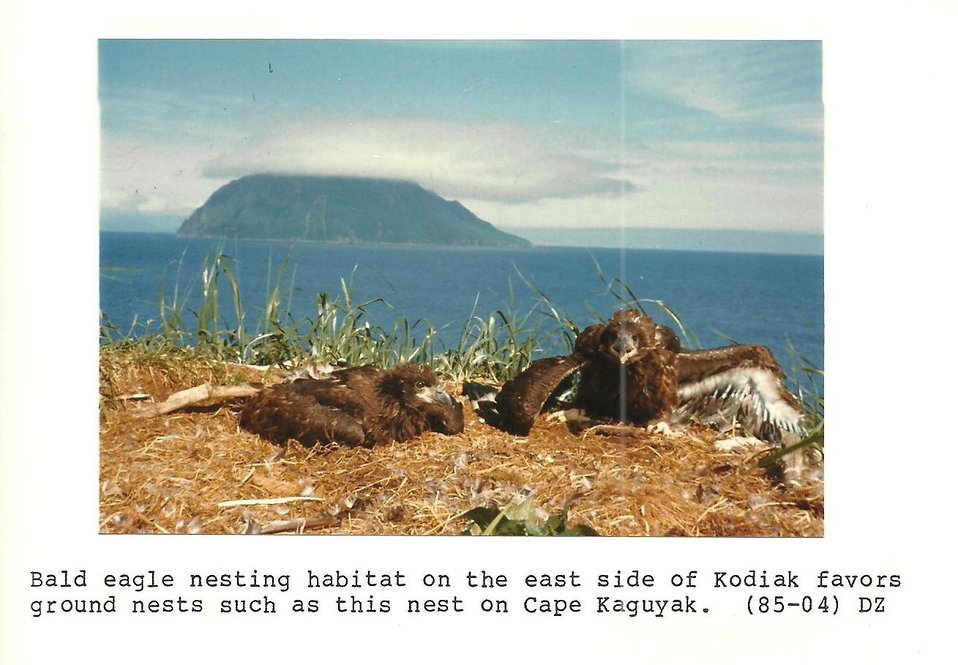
(1985) Bald Eagle Nesting Habitat

Credit: USFWS

Source and Contact: Kodiak National Wildlife Refuge